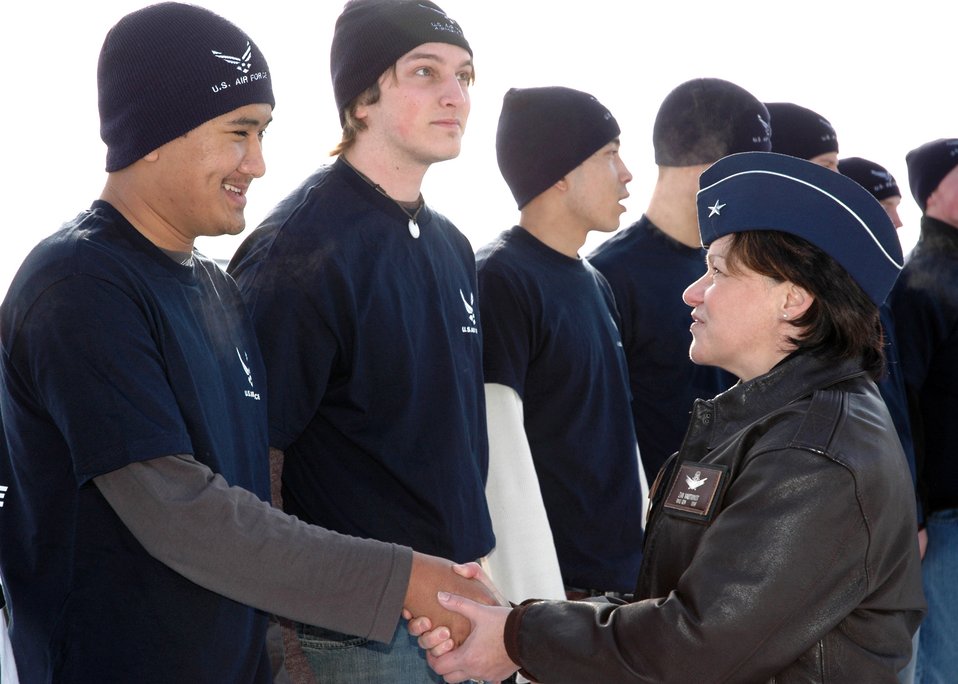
New Airmen

Brig. Gen. Suzanne Vautrinot greets and congratulates one of 34 Delayed Enlistment Program members who took the oath of enlistment to join the Air Force at a Jan. 12 SnoCross event in Shakopee, Minn. Genereal Vautrinot, Air Force Recruiting Service commander, administered the oath and was grand marshal of the event.